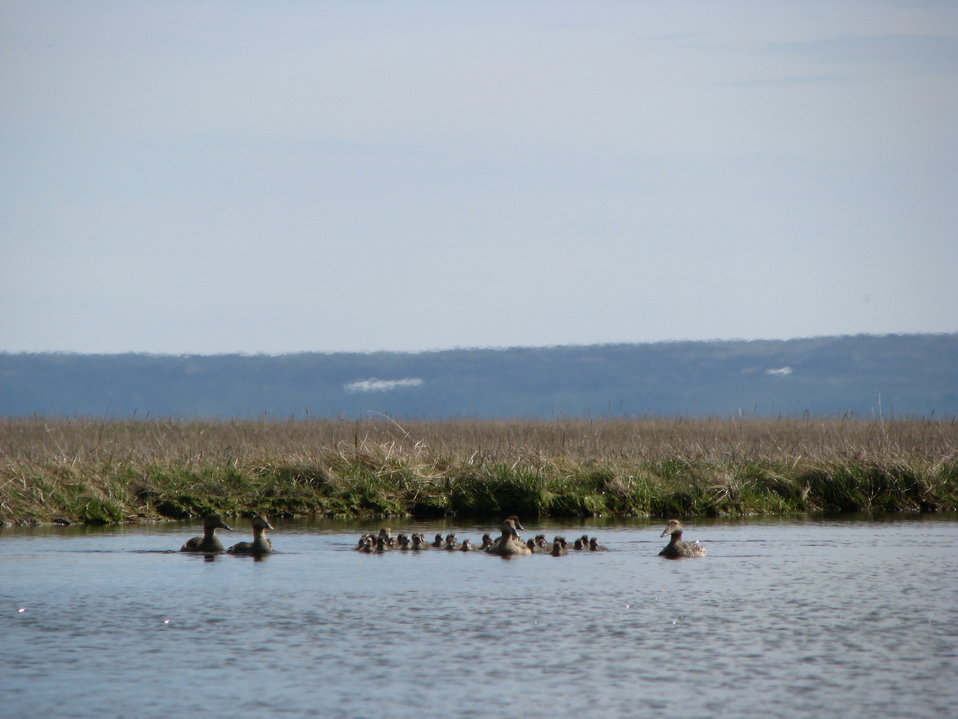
Common eider creche

USFWS Yukon Delta NWR